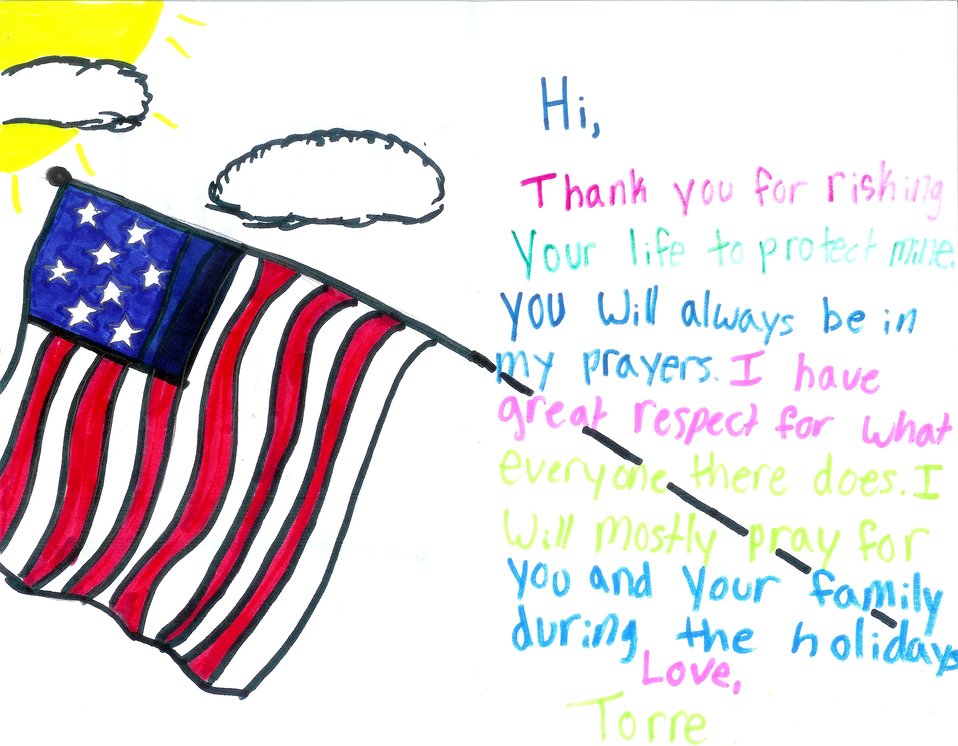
Letters from home filled with support, humor

Approximately 5,000 letters from people across the U.S. arrived in December to the 52nd Fighter Wing Public Affairs Office at Spanghdahlem Air Base, Germany. Public affairs Airmen are distributing them to servicemembers across the base.